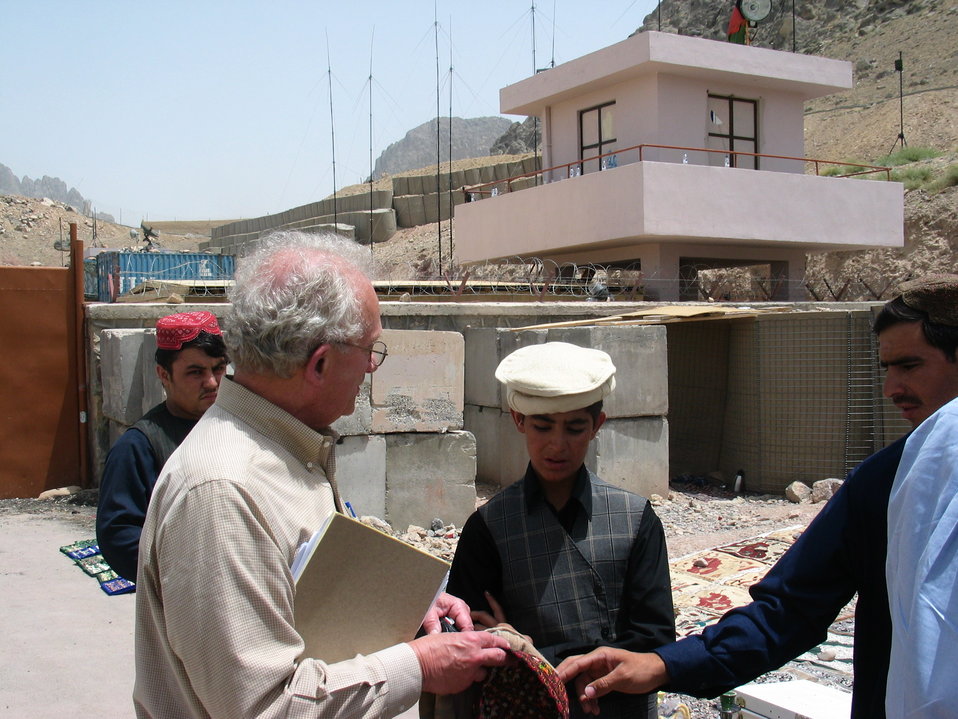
CODEL Berman